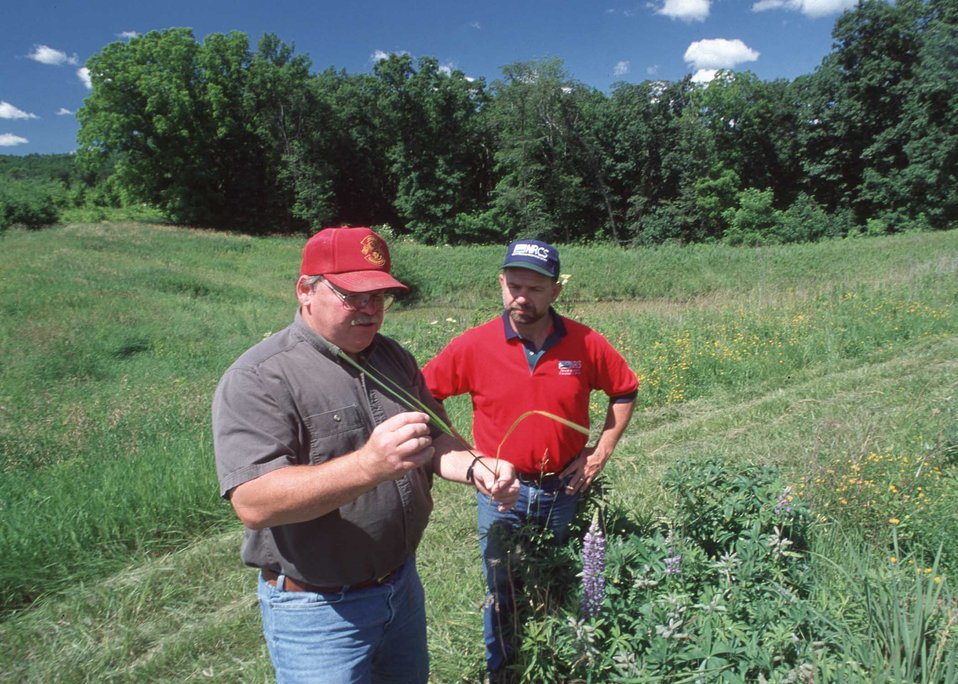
Rick Lange, DC works with Crawford County, WI landowner. Prairie restoration planting on CRP land.